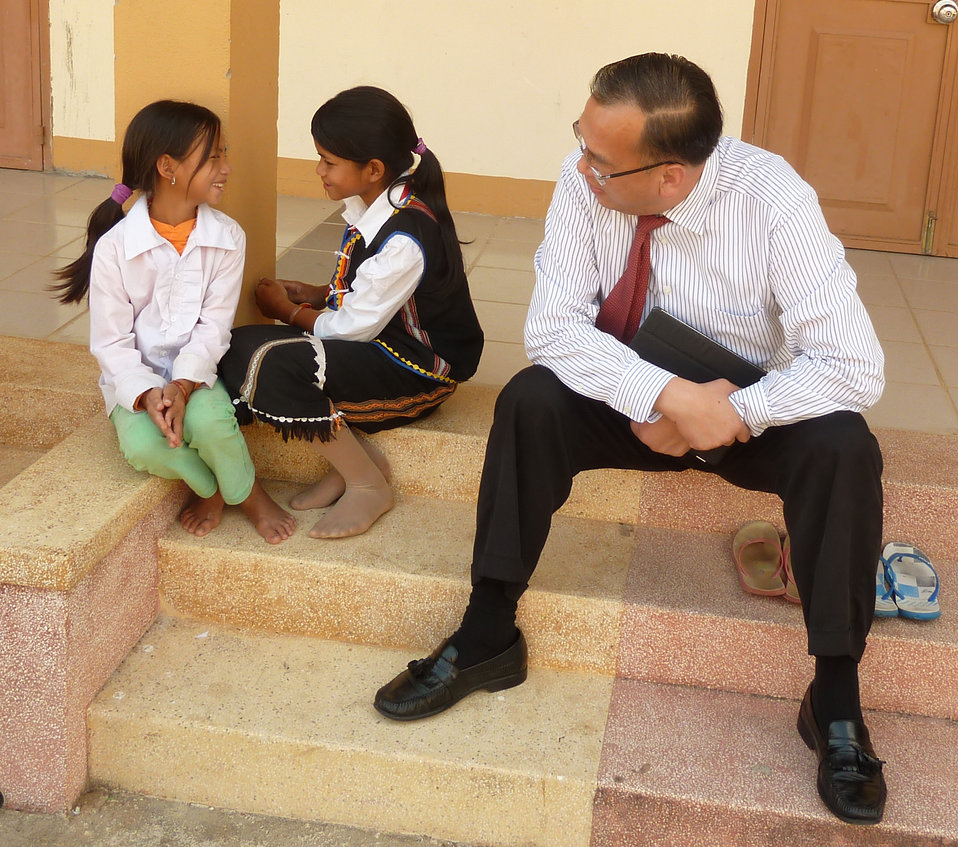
U.S. Consul General Le Thanh An visits with children at the Kon Ray Boarding School